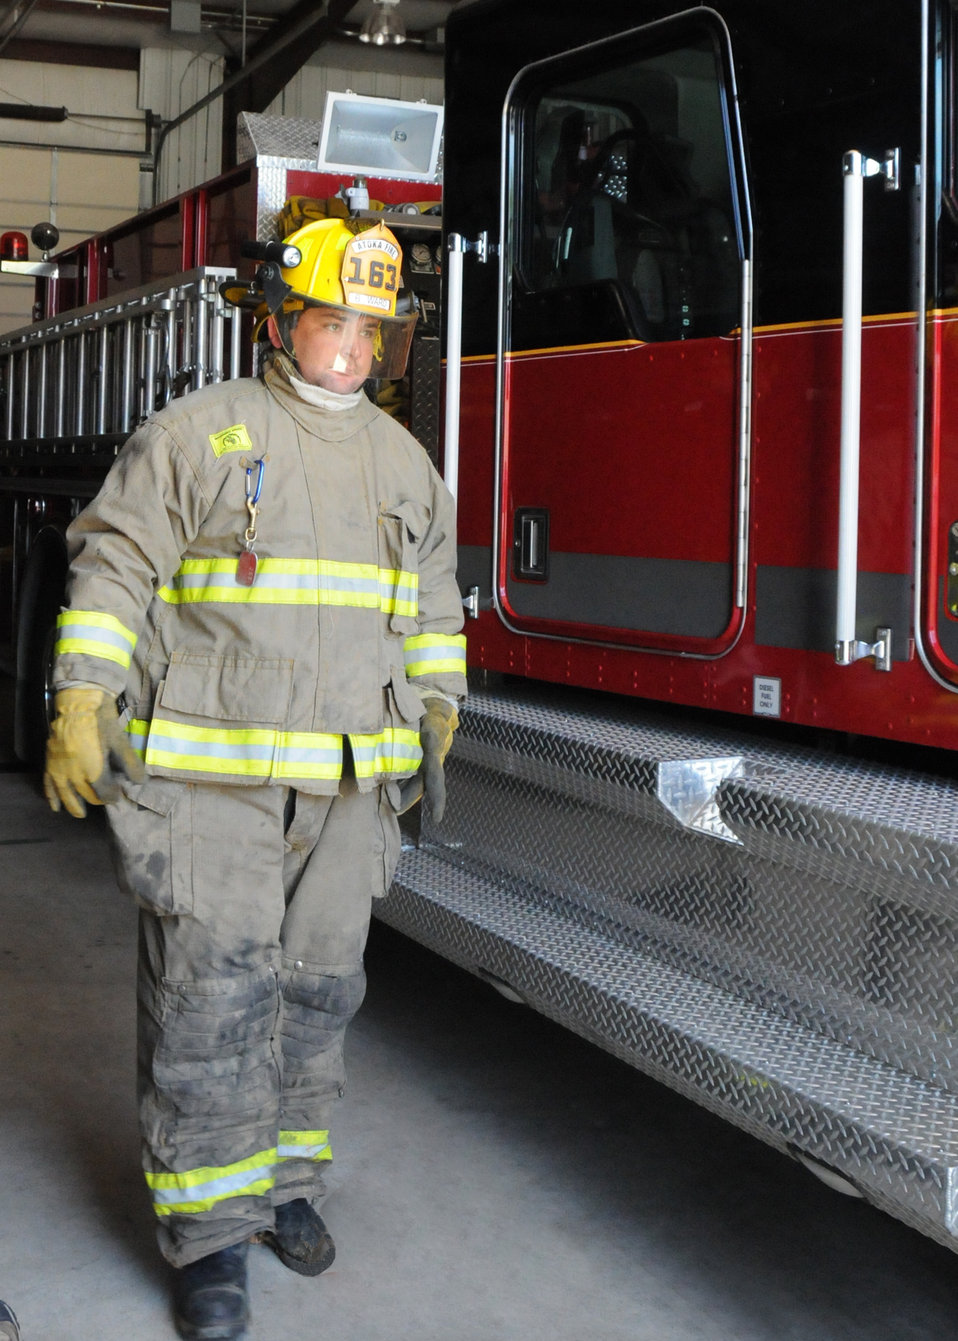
Fireman at Atoka Fire Department in Atoka, Oklahoma.